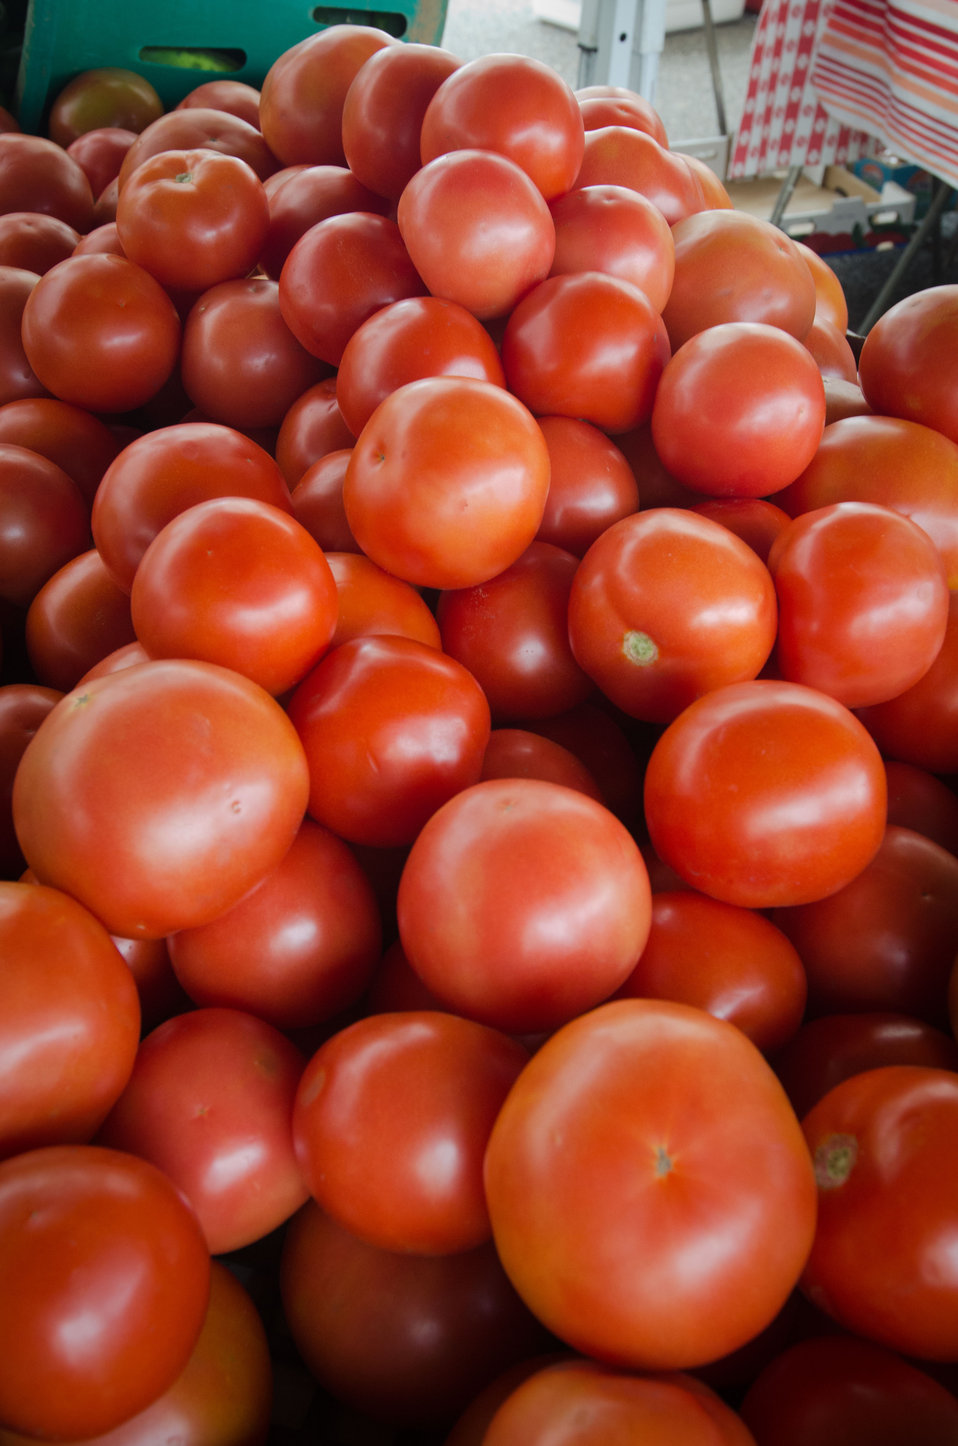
Tomatoes from C & T Produce at the U.S. Department of Agriculture (USDA) summer farmers market opening of the 17th season at the USDA Whitten Building east parking lot in Washington, D.C., on Friday, May 31, 2012. This year's theme is Grow, Healthy, Eat Healthy & Be Healthy. USDA and Fuel Up to Play 60, in partnership with the National Dairy Council and the National Football League, invited residence, visitors and local school children to participate in opening day activities. Hip Hop Public Health featuring Easy A.D. from Cold Crush Brothers and disk jockey Artie Green play music and invite people to get up on stage to dance or hula hoop to get active. D.C. Truck Farm help people know from what plants, that certain herbs, fruit and produce come from by giving tail-gate tours of the garden growing in the bed of their pickup truck. The Peoples Garden Initiative and USDA Executive Master Gardeners gave away a variety of fruit and produce seedlings to include the Tomato ‘Abraham Lincoln’ in celebration of the USDA 150th Anniversary and to share their harvest. New features for 2012 include an on-site sign language interpreter, a hand washing station, and a USDA-certified organic vendor. Other products selling today are fresh fruits, vegetables, herbs, baked goods, meats, kettle popcorn, local honey, hand-made soap and more.